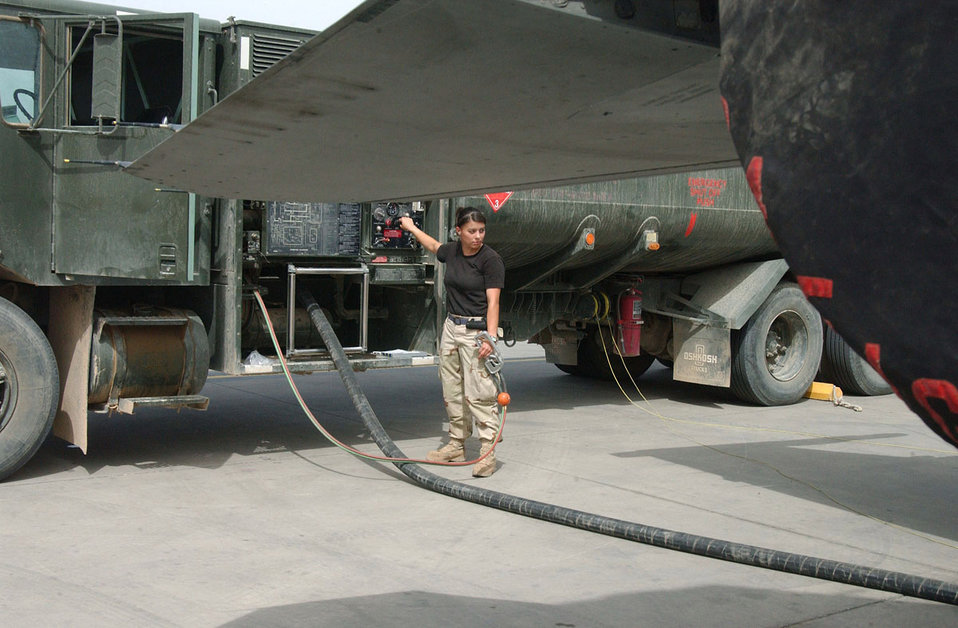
Fuels Airmen cultivate Balad farm

BALAD AIR BASE, Iraq -- Senior Airman Jennifer Hazelwood refuels an F-16 Fighting Falcon here. The Airmen of the 332nd Expeditionary Logistics Readiness Squadron's fuels management flight monitor and sample fuel to ensure it is suitable for aircraft use. Airman Hazelwood is a fuels distribution operator and is deployed from Davis-Monthan Air Force Base, Ariz.